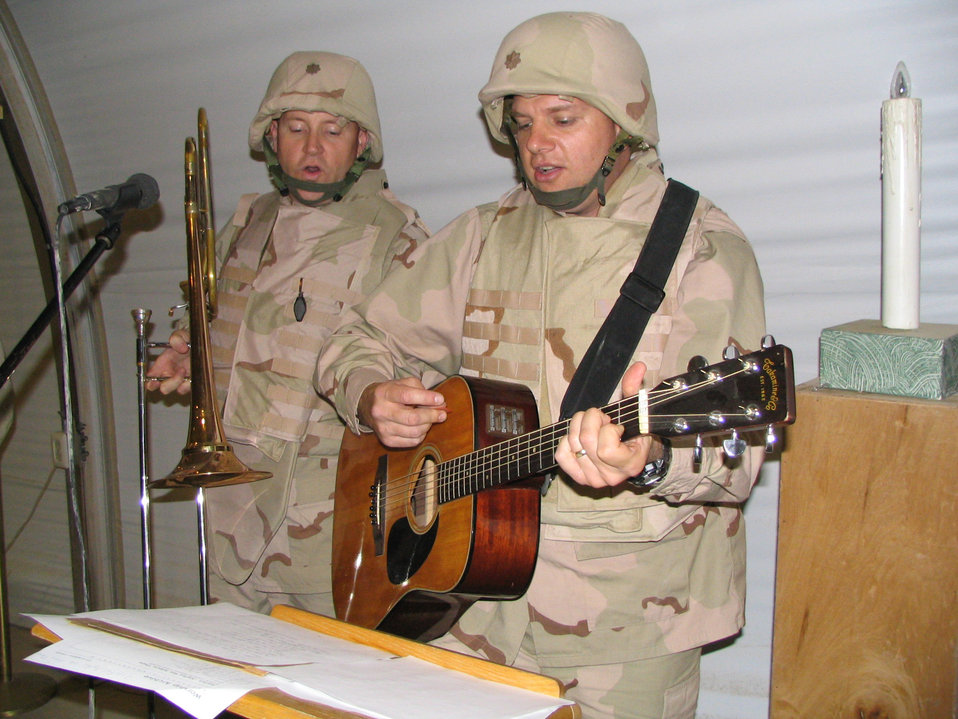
Combat praise

KIRKUK AIR BASE, Iraq -- Majs. Matthew Wilson (left) and Owen Tullos resume practicing a song during a security alert here. People in Kirkuk's Warrior Worship Team use their musical talents to help people here worship. Airmen and Soldiers of all ranks and duties volunteer to be part of the team. Major Wilson is assigned to the 506th Expeditionary Services Squadron, and Major Tullos is assigned to the 506th Air Expeditionary Group.